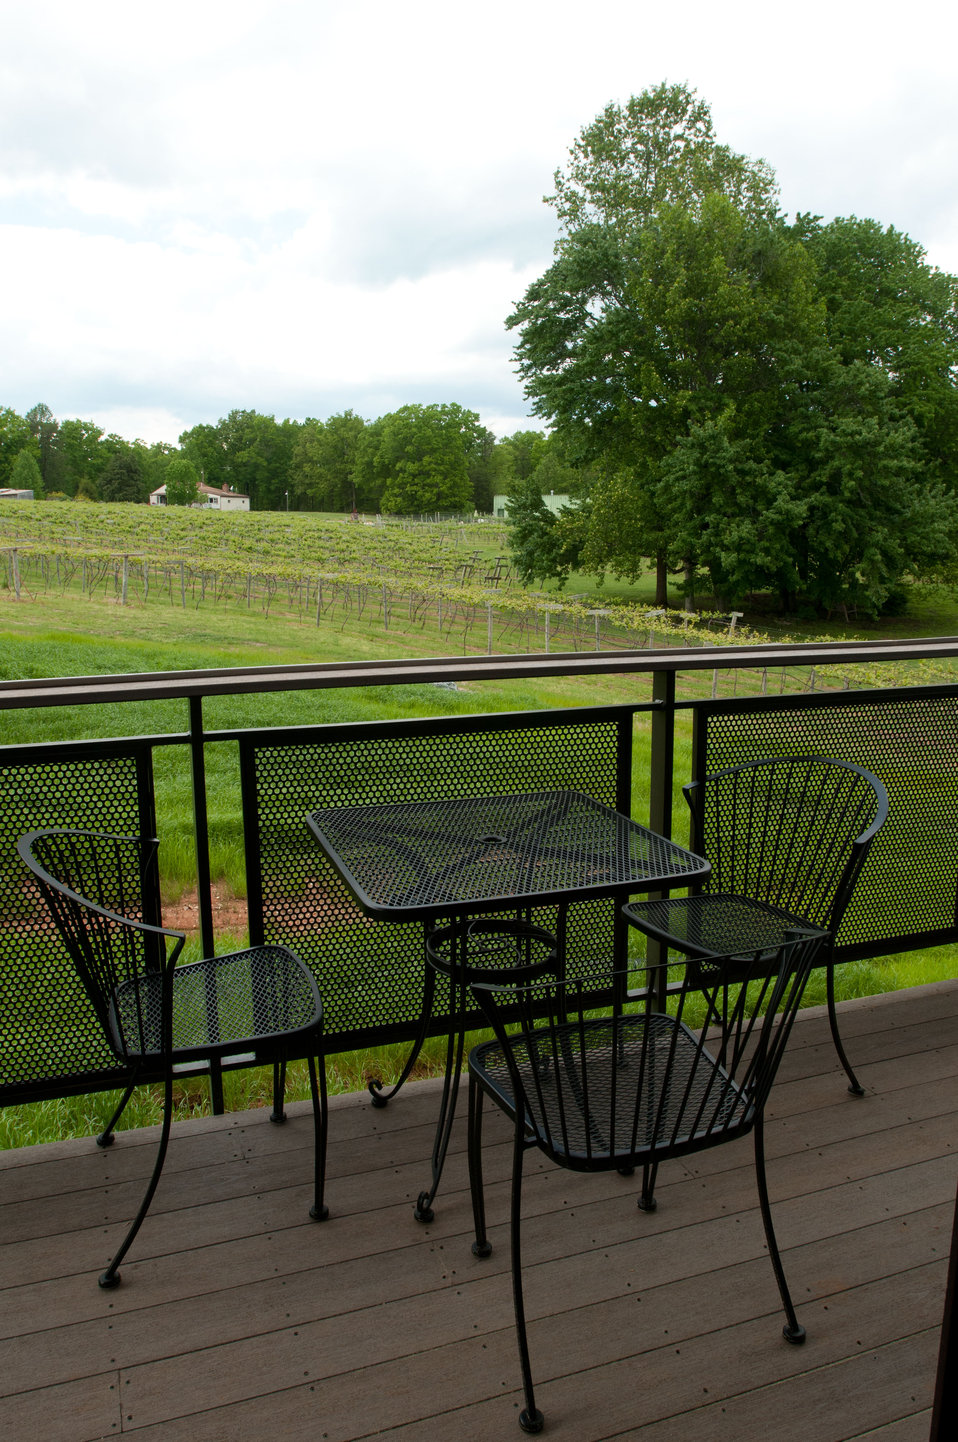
Cooper Vineyards in Louisa, VA, is the first winery on the East Coast and the second in the country to be awarded the fourth and highest, Platinum certification by Leadership in Energy and Environmental Design (LEED).
From a Virginia Wine Board Marketing Office press release, “The process of building a LEED platinum certified building was initially more expensive and arduous than co-owners, Jacque Hogge, MD and Geoffrey Cooper, MD expected, but they were able to get financial assistance from the United States Department of Agriculture. “Know that there are grants available to help with the costs of sustainable building projects,” Hogge advises to other potential green wineries. Cooper Vineyards received 2 of the 3 USDA (U.S. Department of Agriculture Rural Development (RD) Rural Energy Financing program) grants awarded in Virginia in 2010 to help with the expenses of their construction.”
Rural Energy Financing program focuses on loan guarantees, loans and grants to agricultural producers, businesses, cooperatives and rural residents for renewable energy systems and to make energy efficiency improvements.
The tasting room and building collects rainwater from the roof; uses low flow water fixtures to reduce usage by 40%; utilizes structurally insulated panels for the roof and walls; heats and cools the entire building using a geothermal system that includes pipes that are embedded in the parking lot; low-voltage LED lighting with daylight and occupancy sensors provide ample light when it is needed; a solar panel array provides more than 15% of the energy needs for the building, and much of the construction materials are from local and recycled material sources. For more information about USDA please go to www.usda.gov, Rural Development and Rural Energy Financing. LEED was developed by the U.S. Green Building Council (USGBC) is a 501 c3 non-profit organization committed to a prosperous and sustainable future for our nation through cost-efficient and energy-saving green buildings.